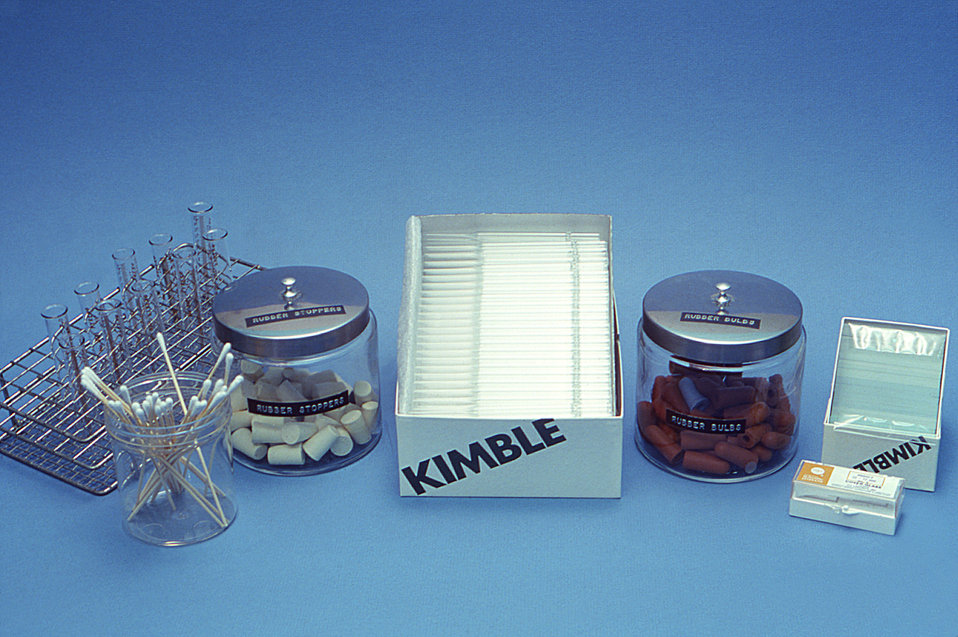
This 1981 photograph depicted a few of the laboratory materials integral in the processing of fecal specimens. Included in this image were test tubes, glass microscope slides with cover slips, cotton-tipped swabs, rubber stoppers, and rubber dropper bulbs.